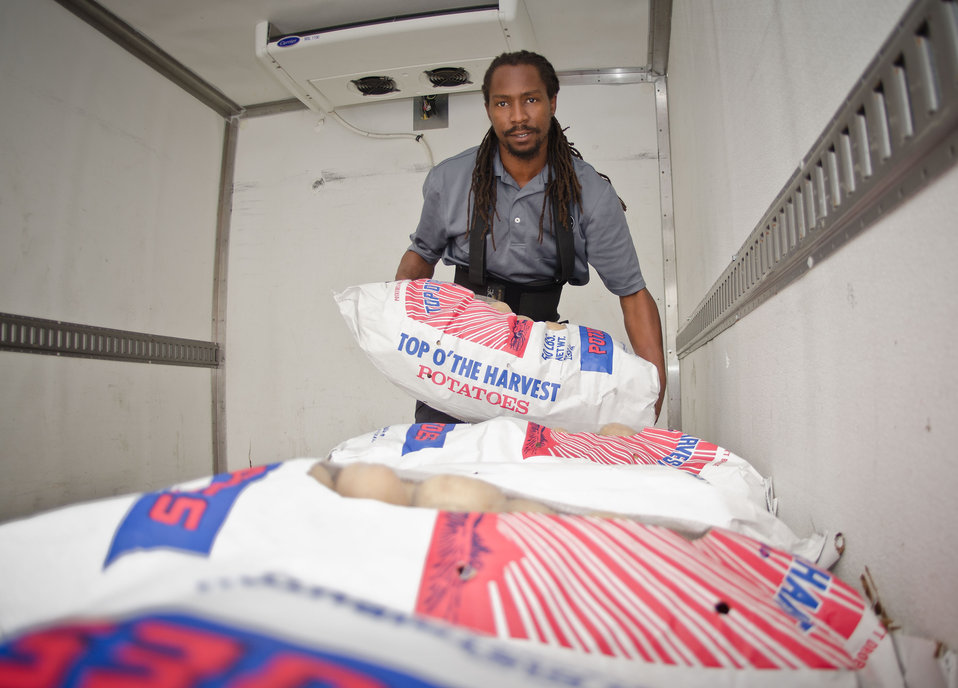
DC Central Kitchen (DCCK) Fleet Coordinator/Transportation Driver Anthony Turner adjusts the load of potatoes in one of the kitchen’s trucks. Agriculture Under Secretary Farm and Foreign Agriculture Service (FFAS) Michael Scuse donated 1,000 pounds of potatoes to DCCK, for the Feds Feed Families Food Drive, on Monday August 20, 2012 in front of the Agriculture headquarters in Washington, D.C. Under Secretary Scuse, a farmer himself purchased and loaded his pick-up this weekend with half a ton of potatoes at nearby Wicks farm, in Delaware. Secretary Scuse farms 1,700 acres of corn, soybeans and wheat. He says that this is the first of many more donations this year.